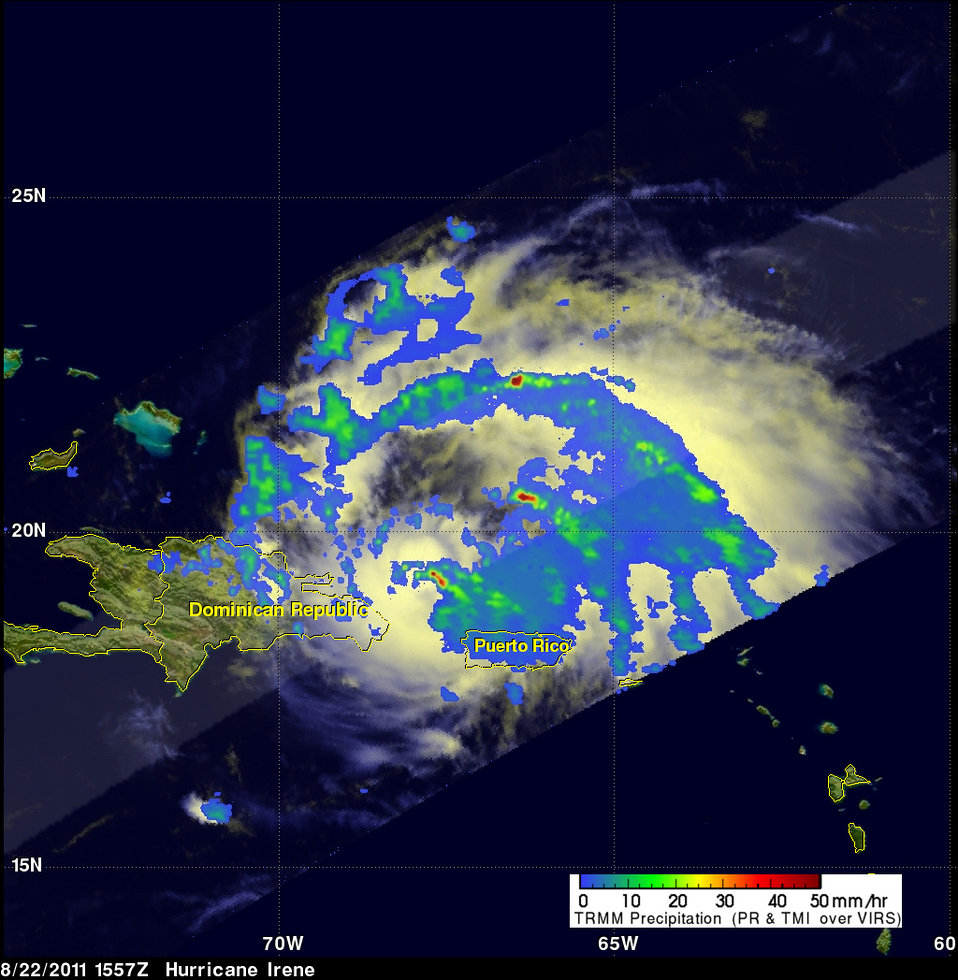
National Aeronautics and Space Administration, (NASA): Hurricanes/Tropical Cyclones